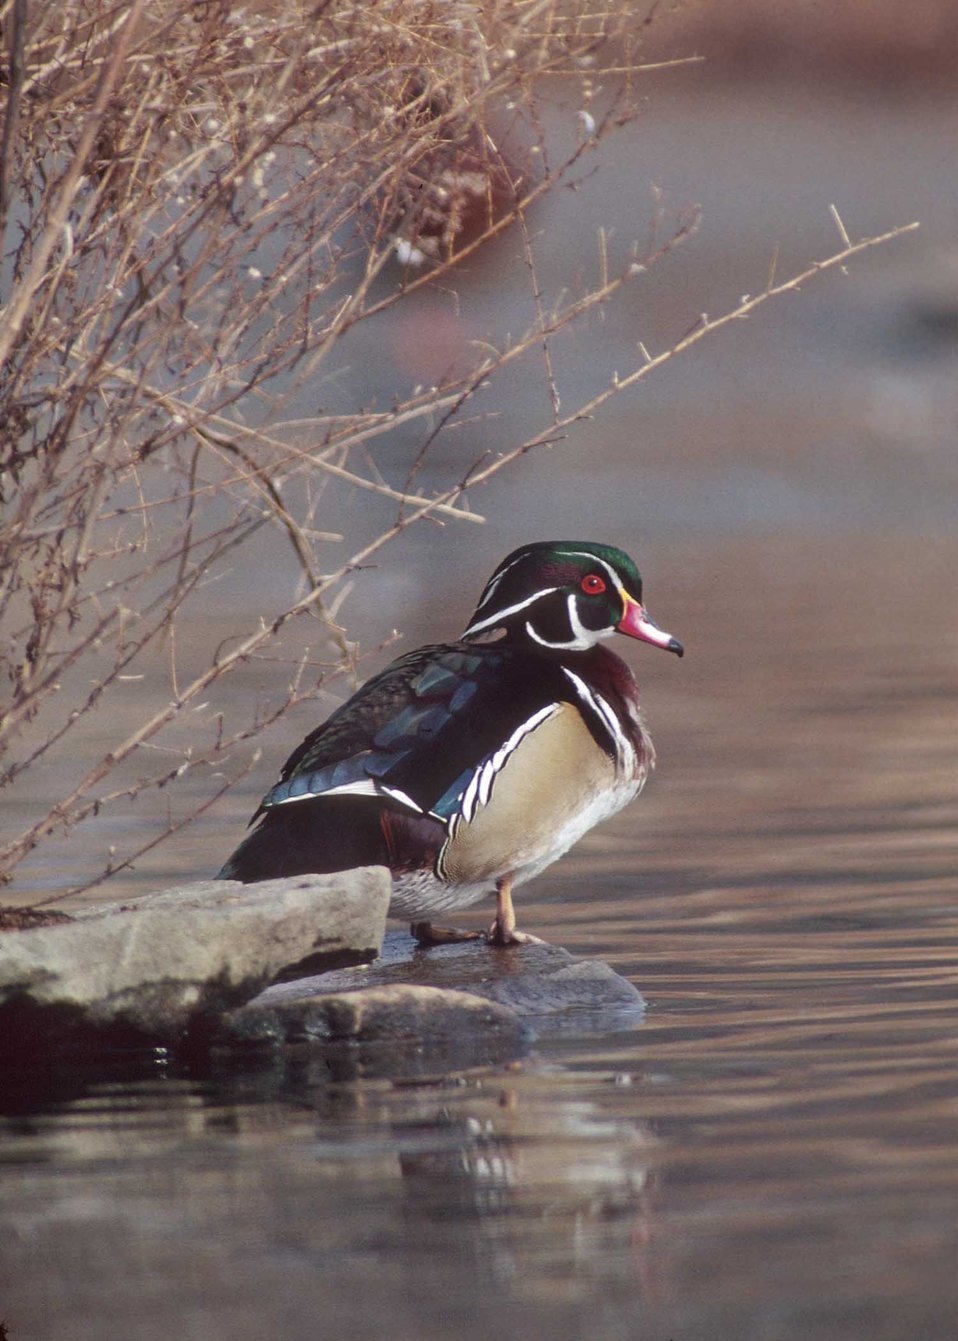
A wood duck rests in a Maryland wetland.